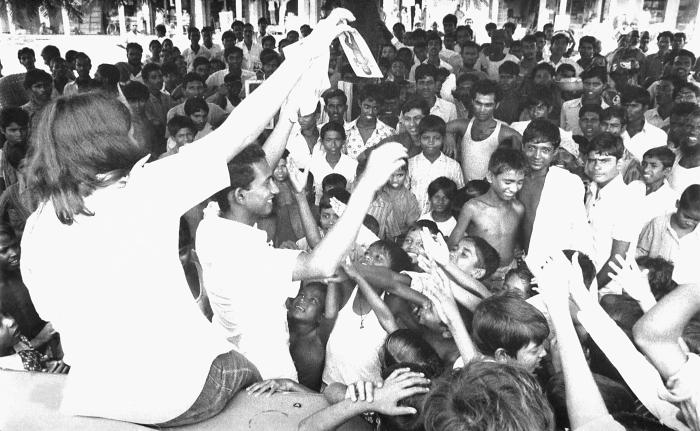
These smallpox eradication team members were photographed as they were in the process of distributing smallpox information leaflets to a large group of villagers, primarily made up of children, who could be seen reaching for the papers held overhead.The seated woman, a vacationing American student, could be seen holding up the 'smallpox photograph' that depicted a small child who displayed the characteristic maculopapular rash. On one side, the entire child's body was shown, while on the opposite side, a close-up of the child's face was depicted. The last known case of naturally occurring smallpox, a young girl named Rahima Banu, was reported by an 8 year old girl, who was paid her 250 Taka reward. All rewards were handed out in a public place.